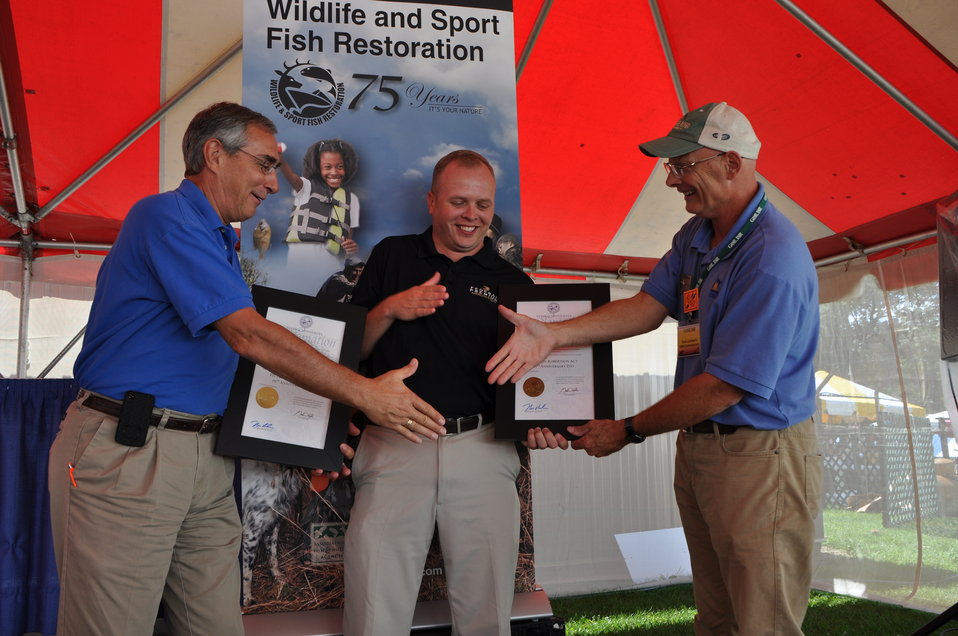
Celebrating 75 years of Conservation Success

Federal, state and industry leaders joined hands to celebrate 75 years of conservation success.